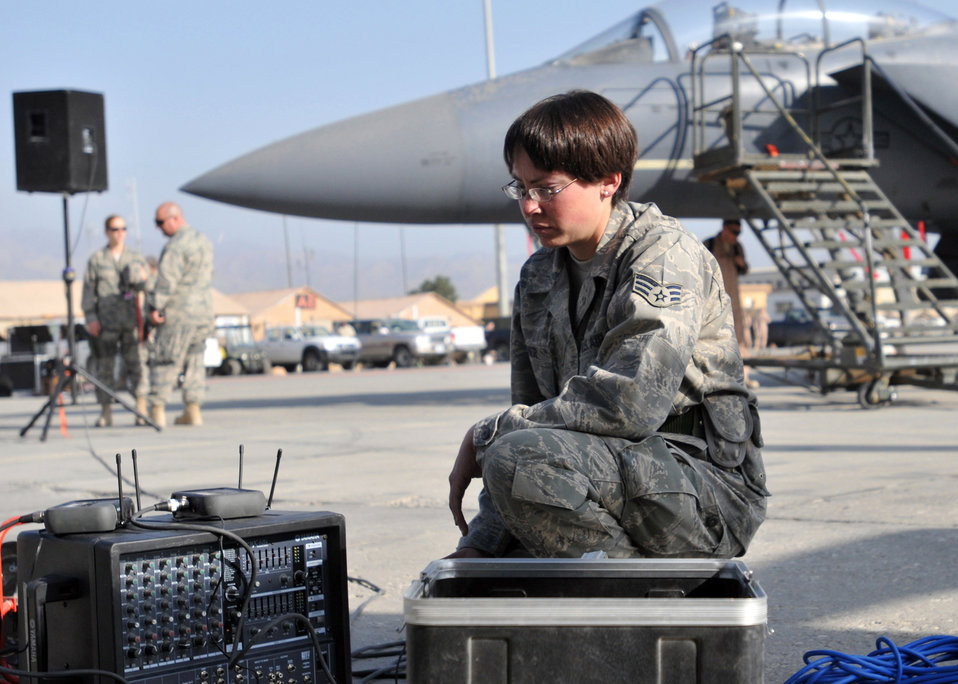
Warfighters take time for Air Force's 62nd birthday

Senior Airman Stephanie Warner does one final test on the public sddress system at an open house ceremony in honor of the Air Force's 62nd birthday Sept. 18, 2009, at Bagram Airfield, Afghanistan. Airman Warner is a technician in the 455th Expeditionary Communications Squadron.